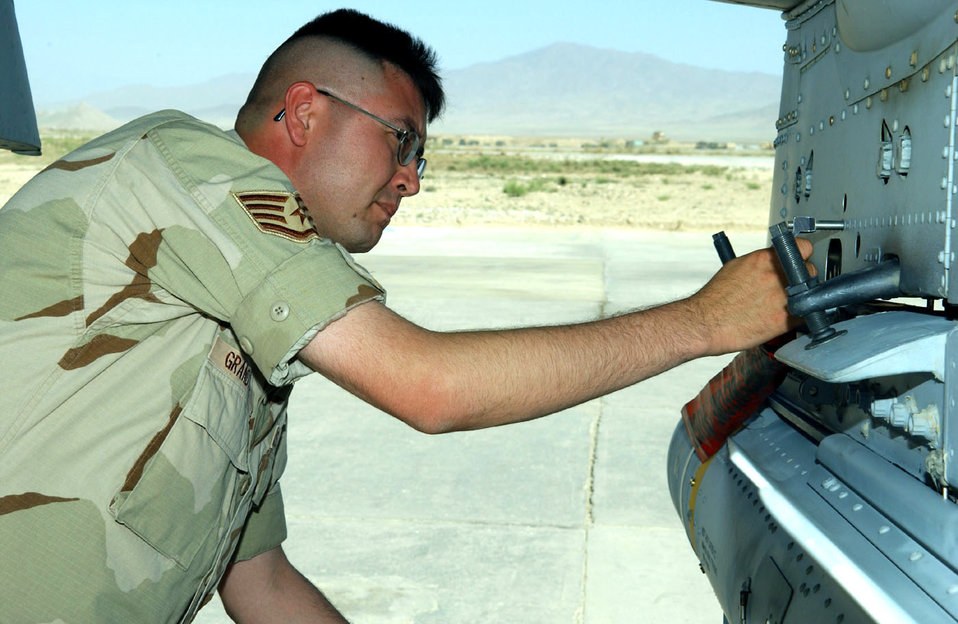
Keeping safety a priority

BAGRAM AIR BASE, Afghanistan -- Staff Sgt. Thomas Grandstaff inspects an A-10 Thunderbolt II on the flightline here to make sure the AGM-65 Maverick missile is securely loaded. He is the 455th Air Expeditionary Wing weapons safety manager.